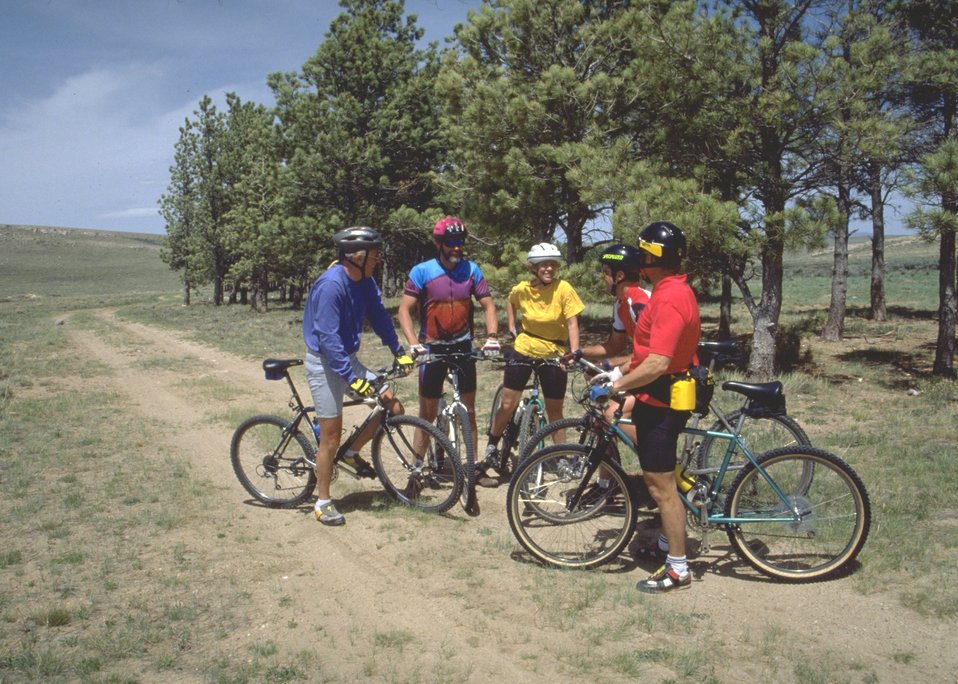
Bike riding on an unknown trail.